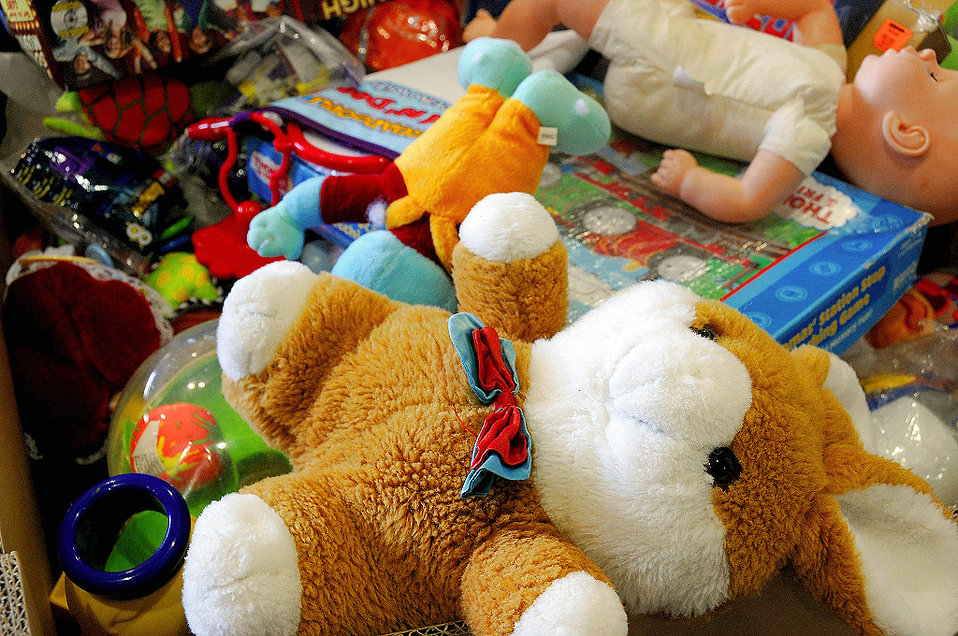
Operation Christmas Drop Holds Final Box Build

More than 186 boxes are filled with toys, first aid kits, food and supplies Dec. 7 at Andersen Air Force Base, Guam, during the Operation Christmas Drop final box build. Christmas Drop is the longest running humanitarian campaign in the world and this year marks it 56th year in operation.